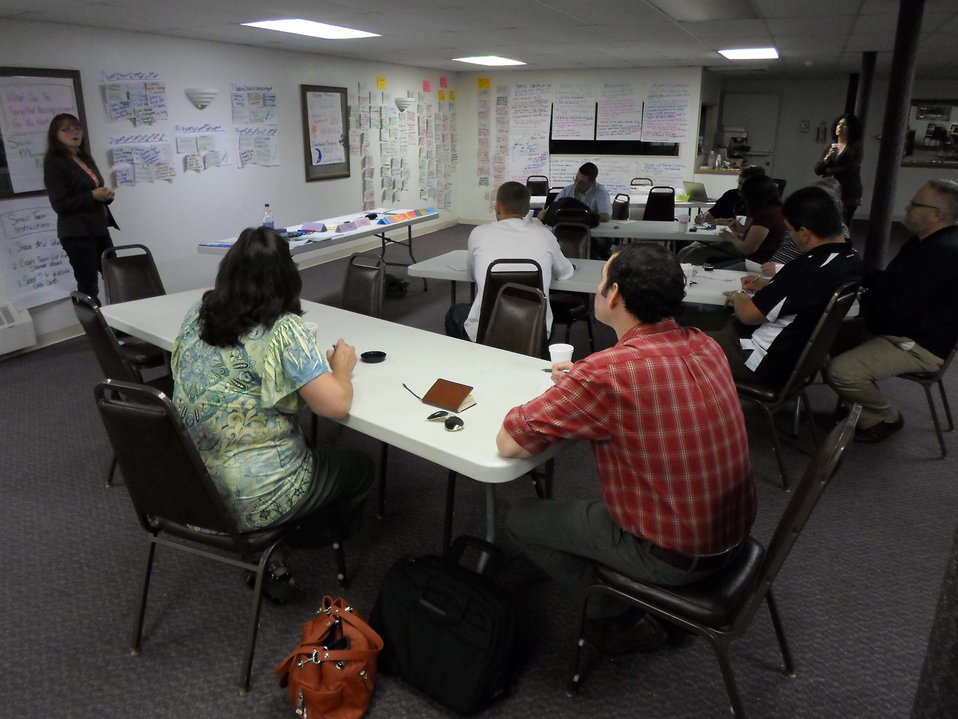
Strategic Energy Planning Session; DOE Office of Indian Energy Indian Energy

January 3, 2012 - The START energy planning workshop held at the Passamaquoddy Tribes of Indian Township and Pleasant Point in Maine helped open the lines of communication between two reservations that exist under a single Tribe. Lesley Kabotie leads an interactive strategic energy planning session.